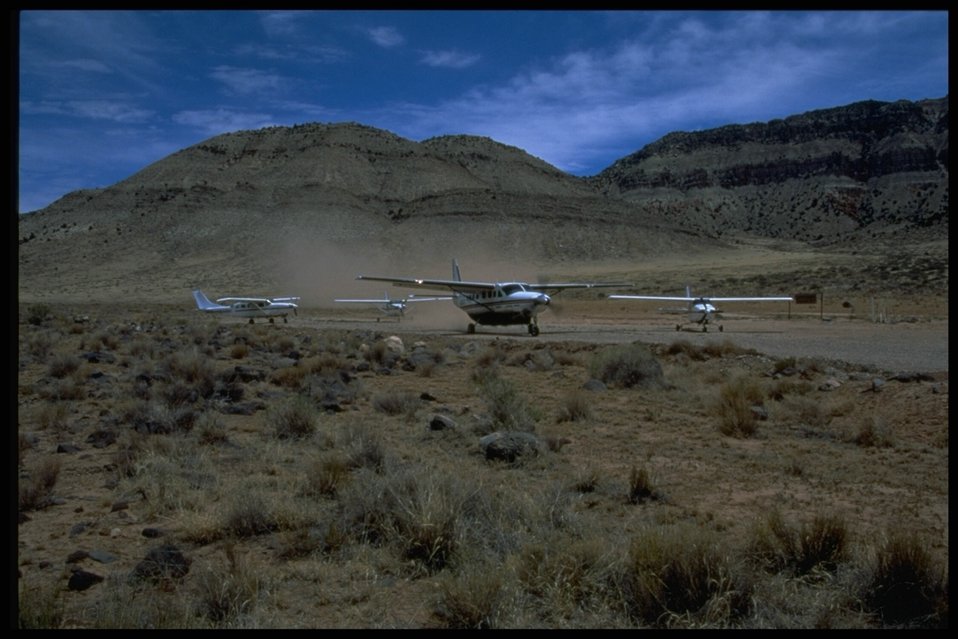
Small planes on an airstrip in the Grand Canyon-Parashant National Monument.